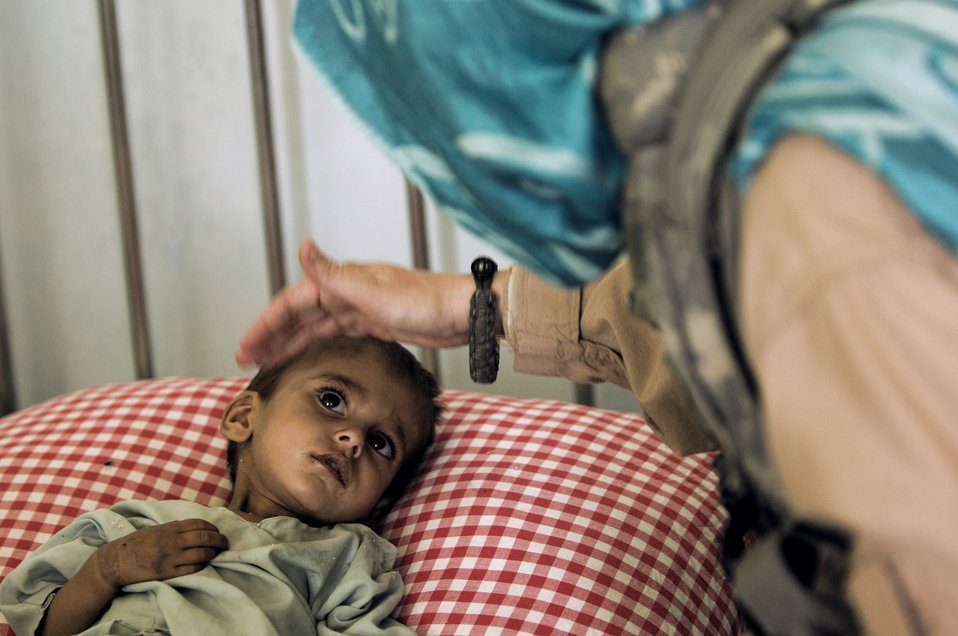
Zabul team combats malnutrition, unsafe water

Senior Airman Felicita Torres-Perkins comforts a young Afghan girl suffering from malnutrition Aug. 10 at the Qalat Hospital in Qalat, Afghanistan. The Airman is deployed from McGuire Air Force Base, N. J., and wears the scarf in an effort to honor the customs of this region of Afghanistan.